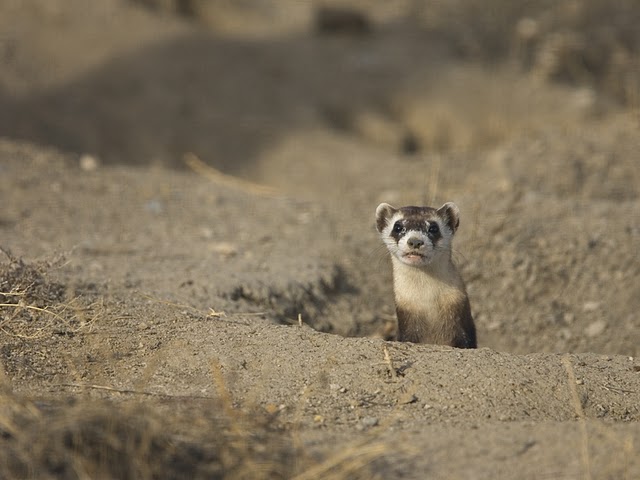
Black-footed Ferret